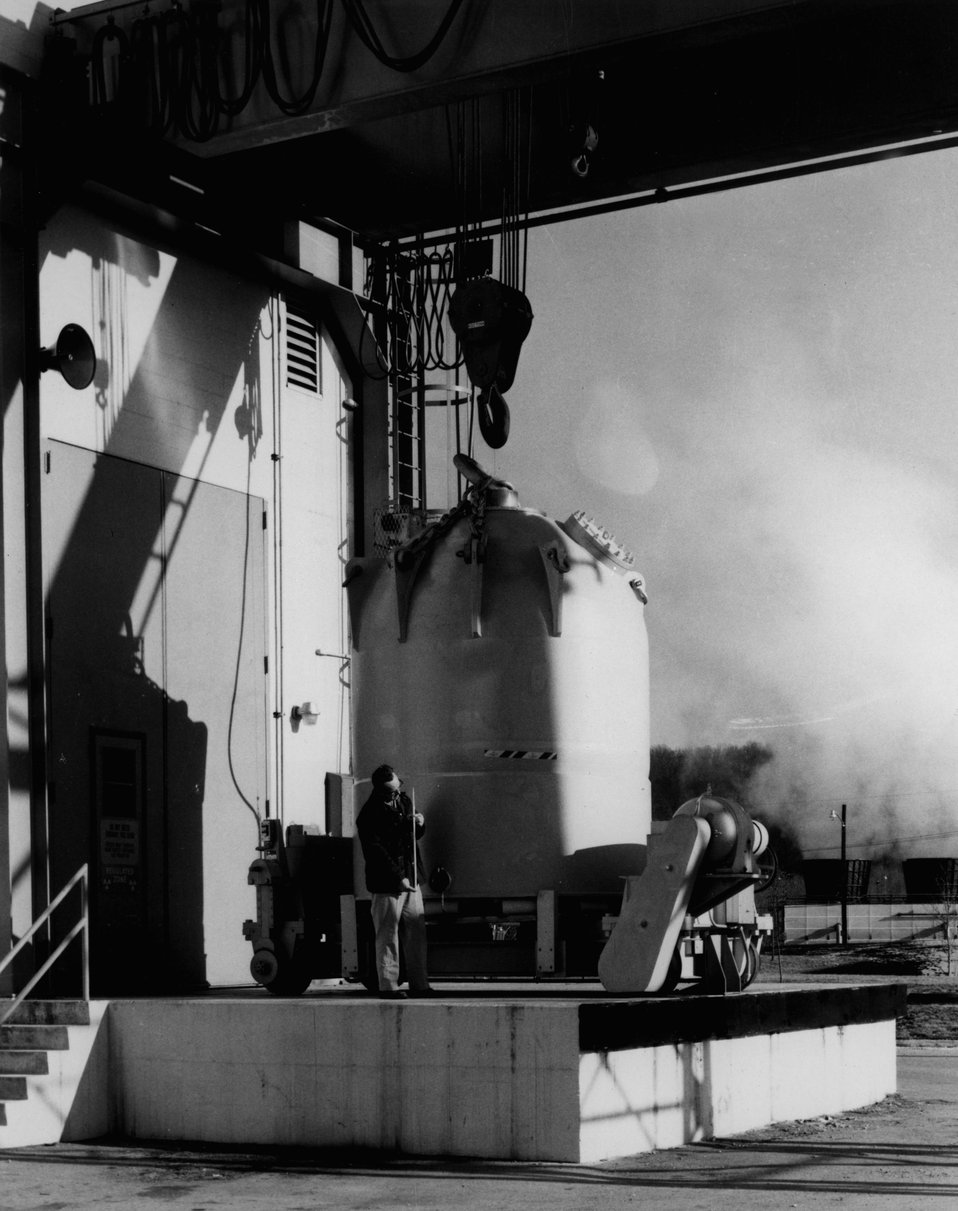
Irradiated Californium-252 targets are transported in this 50-ton carrier from the High Flux Isotope Reactor (HFIR). c. 1971